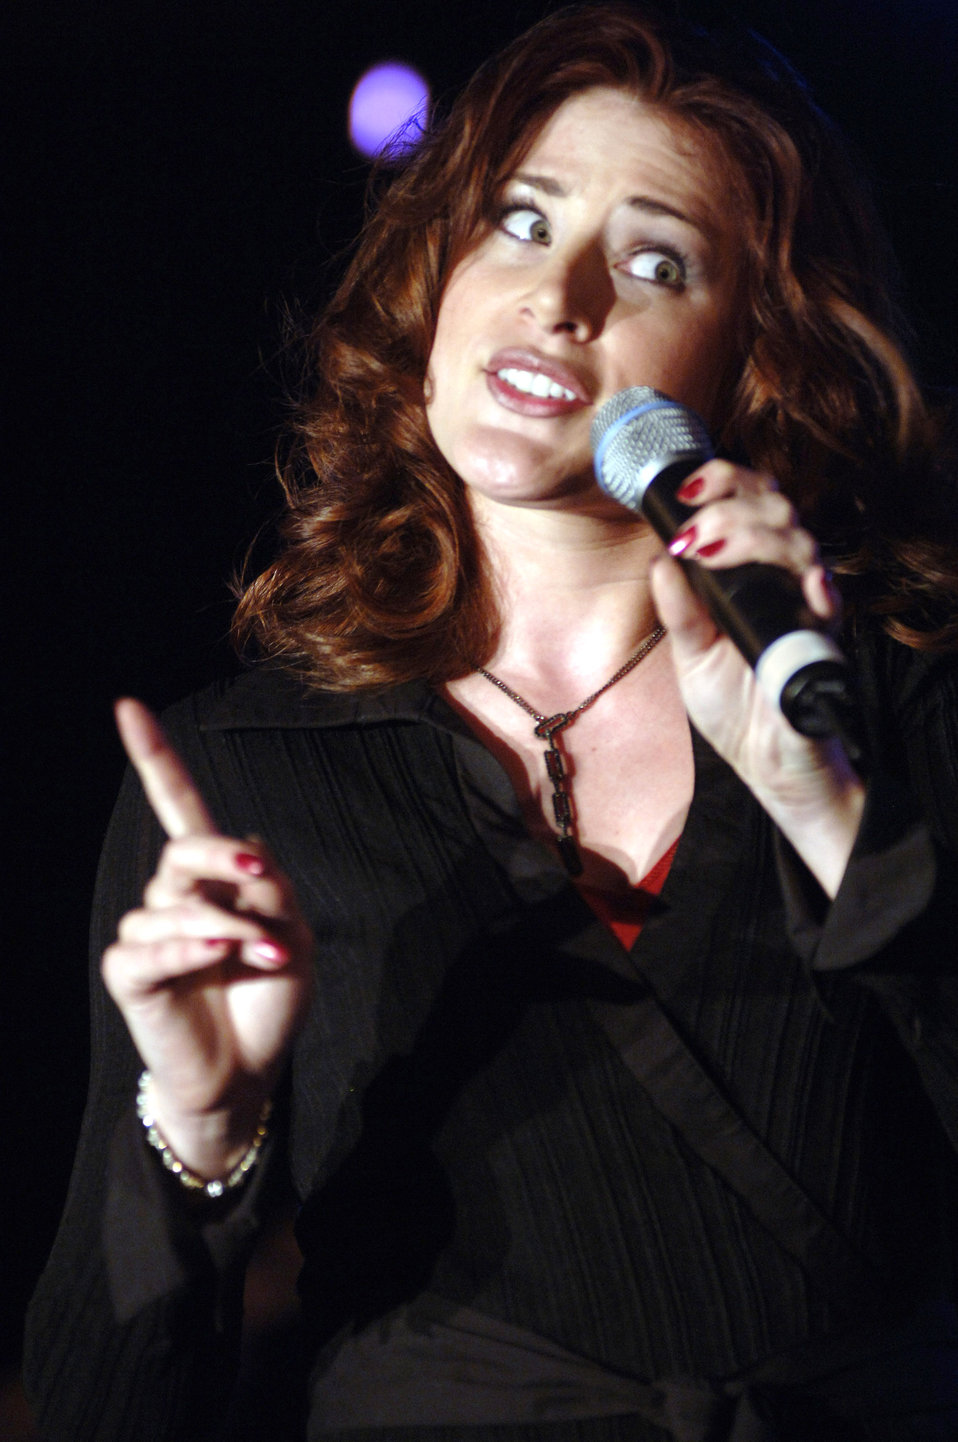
'USAFE Idol'

Staff Sgt. Michelle Miller took 2nd place after her two strong performances during United States Air Forces in Europe's